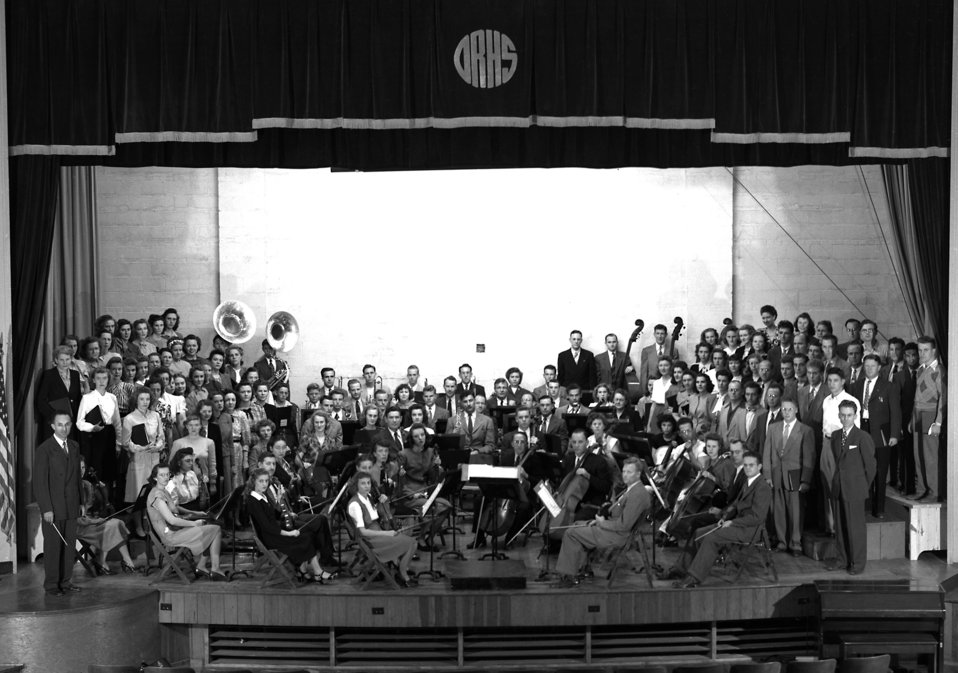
Oak Ridge Symphony 1948

4340 DOE photo Ed Westcott 10-28-1947 Oak Ridge Tennessee 8 x 10 Camera with 12' lens open flash for 3 seconds Ansco Superpan Press film